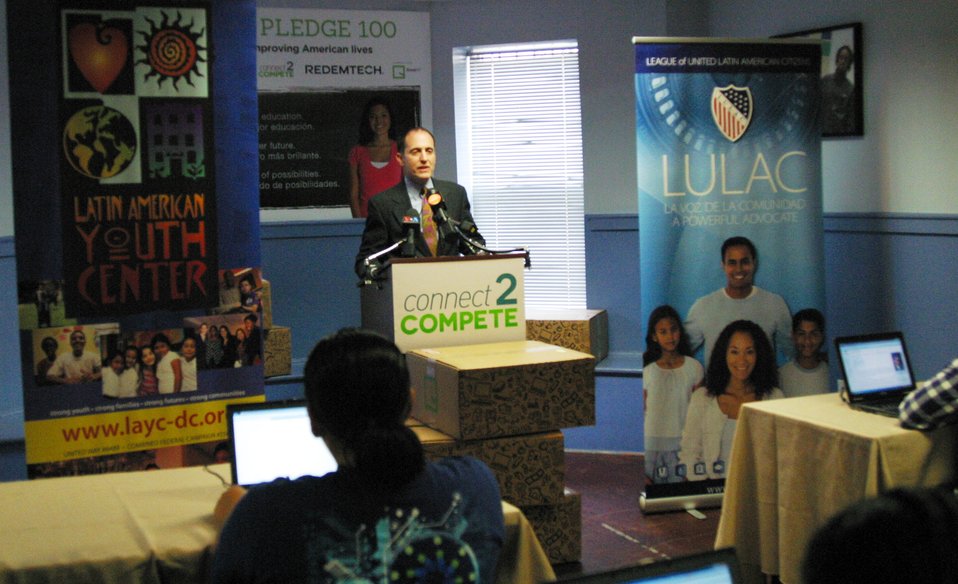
Connect 2 Compete: LULAC 8.7.12

Ben Hecht, Chairman, Connect2Compete speaking at the League of United Latin American Citizens (LULAC), and the Latin American Youth Center (LAYC) to announce the launch of a nationwide computer recycling and donation effort to support C2C’s efforts to close the digital divide.